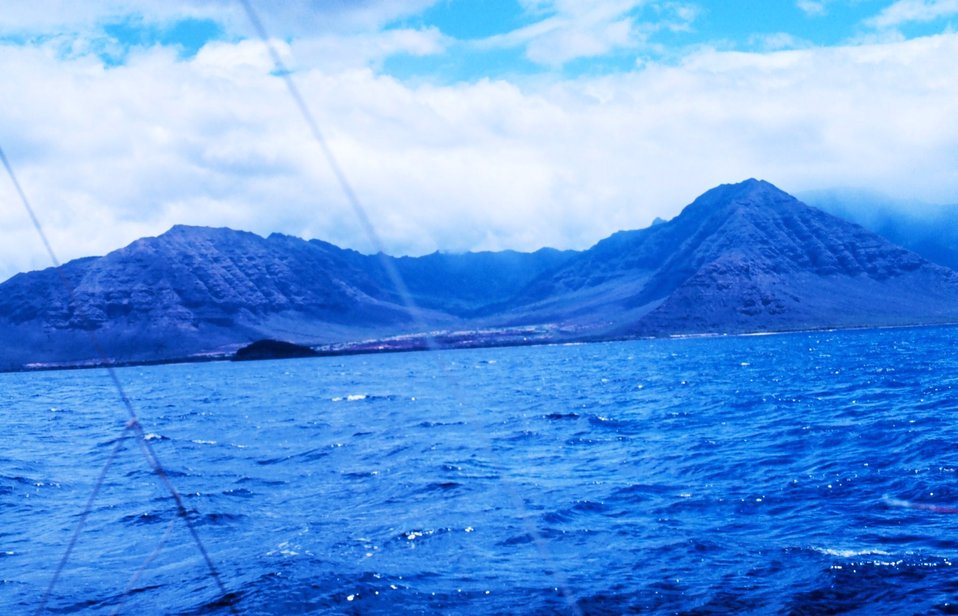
West coast south of Kaena Point